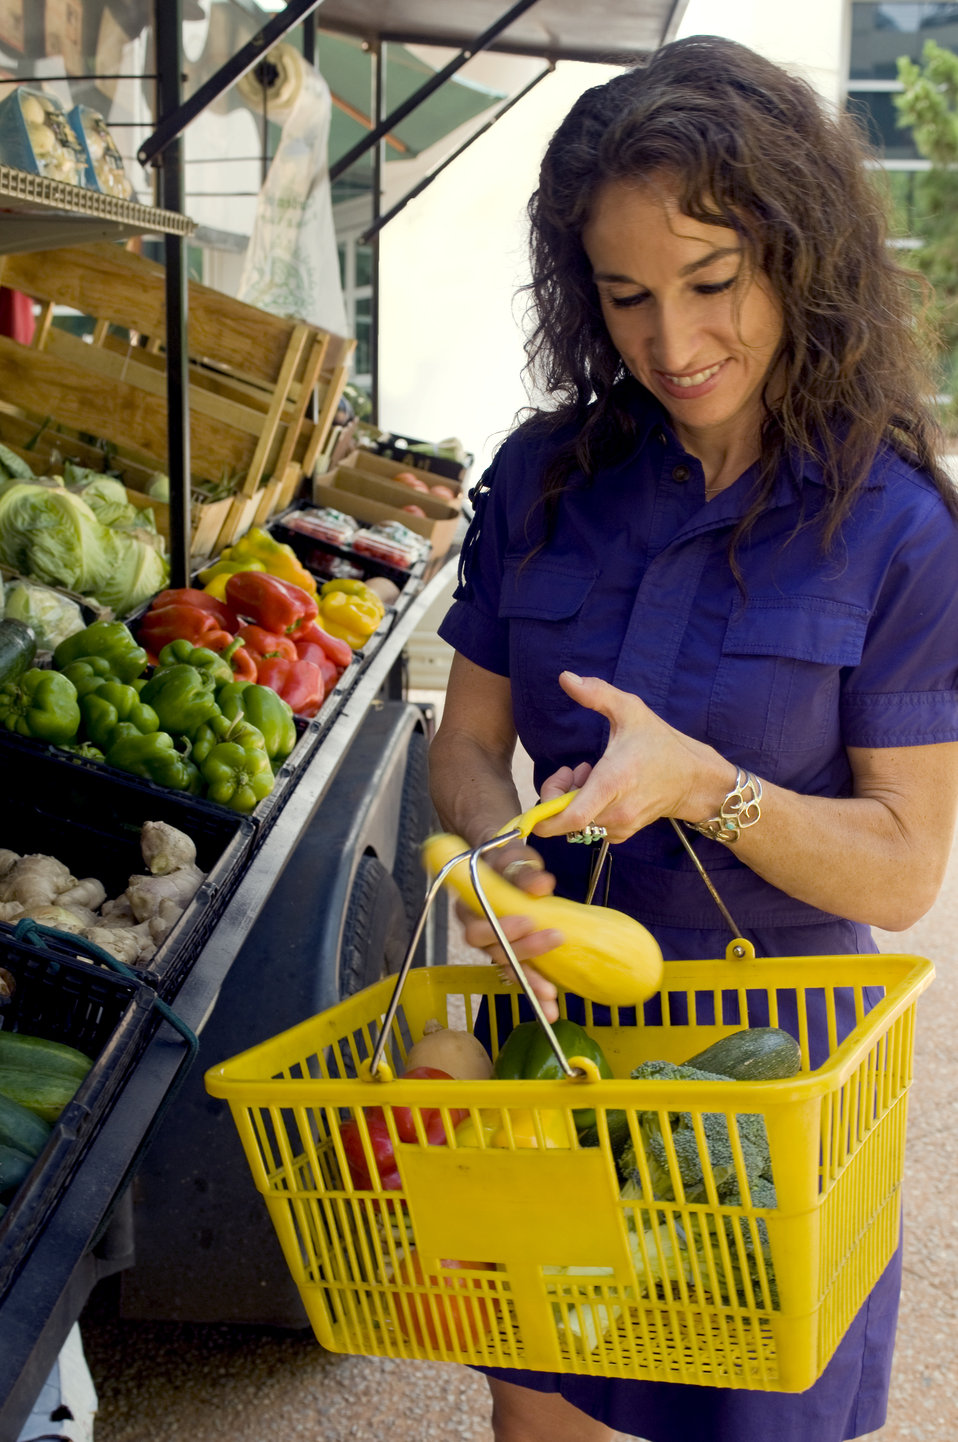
The woman pictured here was choosing an array of healthy fruits and vegetables at a mobile produce market, and placing her choices into a yellow plastic basket she'd held in her left hand. Here she had made a choice in a bright yellow squash, which is a food that has been shown to be high in its dietary fiber and vitamin C content.